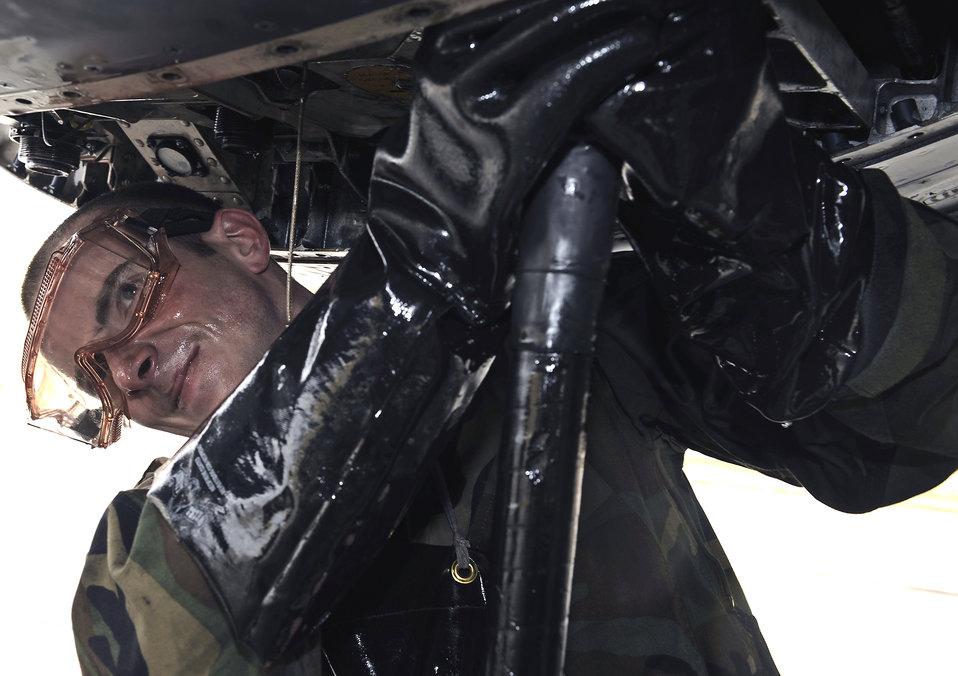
It's a dirty job

Airman 1st Class Derrick Gregg removes a hydraulic test line from a B-1B Lancer April 17 on the flightline at Ellsworth Air Force Base, S.D. The B-1 is a long-range bomber capable of delivering precision and non-precision weapons anywhere in the world. Airman Gregg is a 28th Maintenance Squadron crew chief.